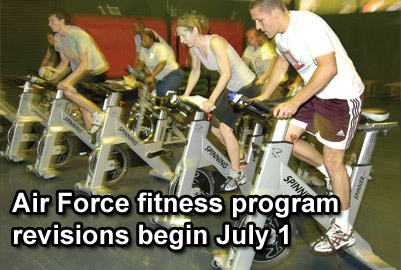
Air Force fitness program revisions begin July 1

Airmen will test against the new fitness assessment standards beginning July 1, 2010. Changes include bi-annual testing, minimum requirements within testing components and establishing fitness assessment cells to proctor tests. Airmen must meet minimum requirements as defined by the new instruction for each of the four components. Components are weighted as follows: 60 points for aerobic, 20 points for body composition, 10 points for pushups, and 10 points for sit-ups, for a total of 100 possible points.